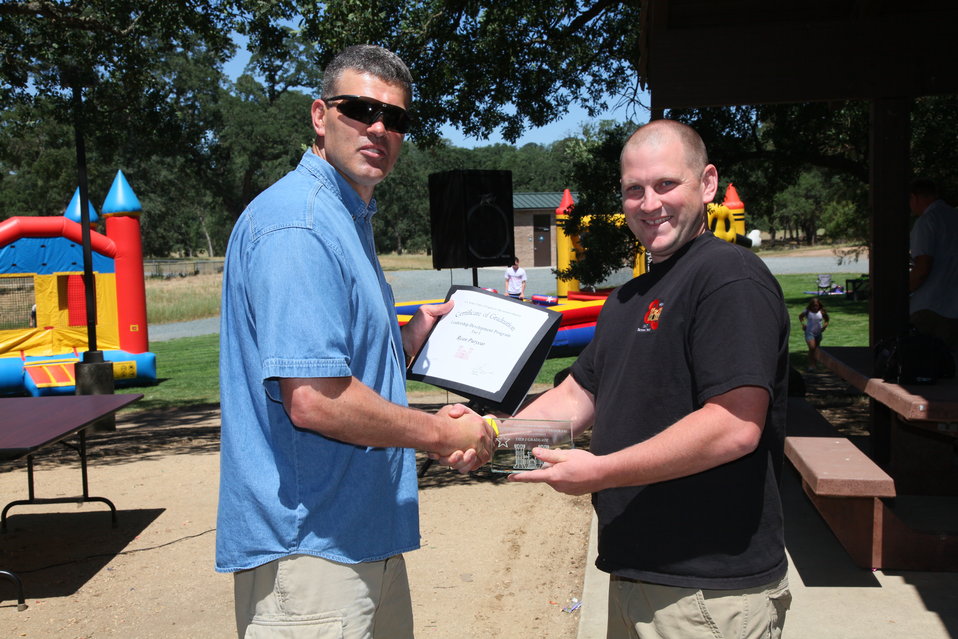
2011 Annual Picnic